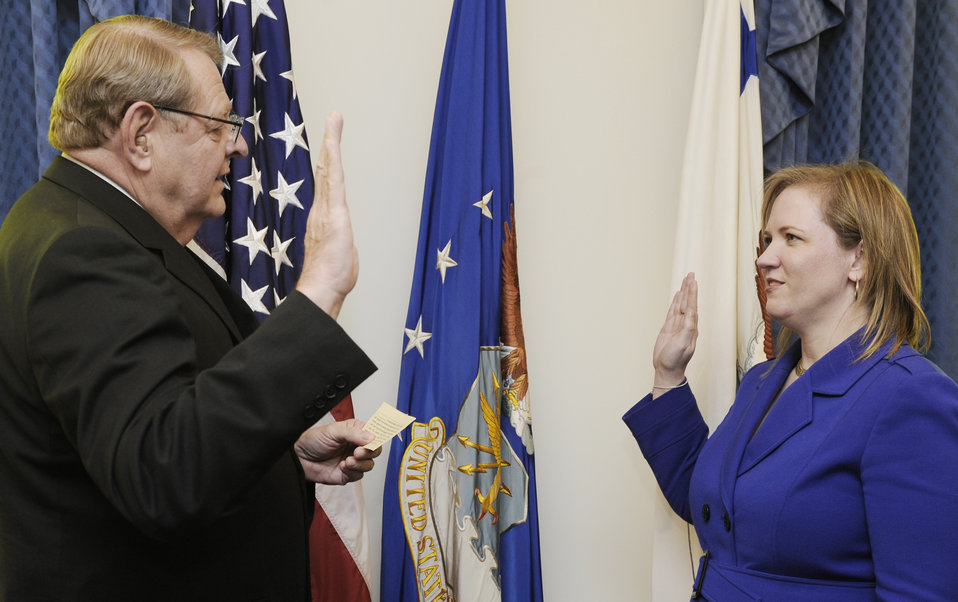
Air Force's new undersecretary sworn in

Erin C. Conaton takes her oath of office March 15, 2010, as the new undersecretary of the Air Force during a ceremony in the Pentagon officiated by William Davidson, the administrative assistant to the secretary of the Air Force.